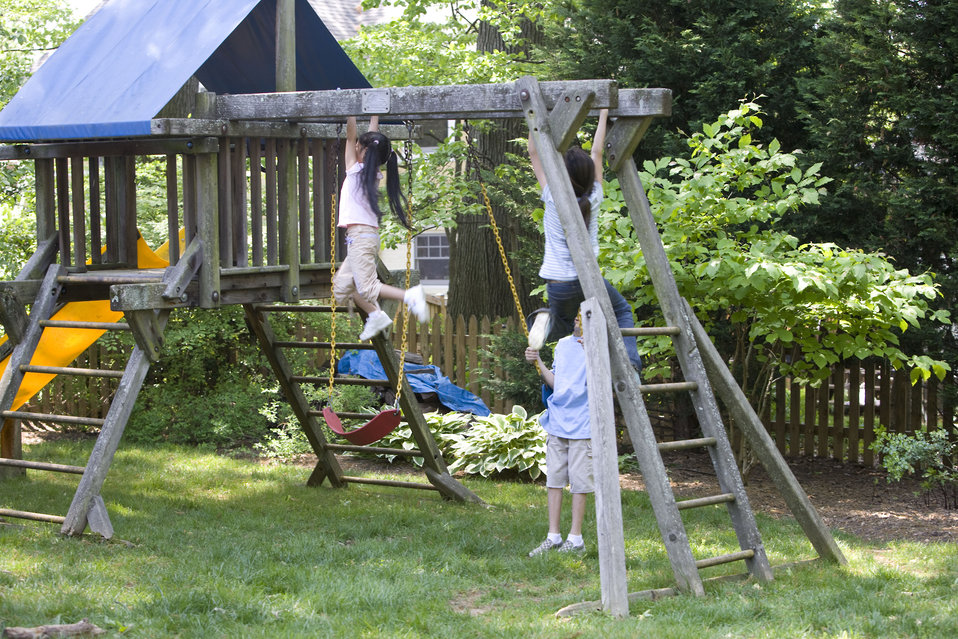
Children love playing outside, and these children were thoroughly enjoying their wooden swing set, and all were having fun in the fresh outdoor air, and the beautiful weather. It's important to note that older wooden playsets may have been treated with arsenic and/or creosote, and therefore, parents need to know if these chemicals were used in their manufacture.